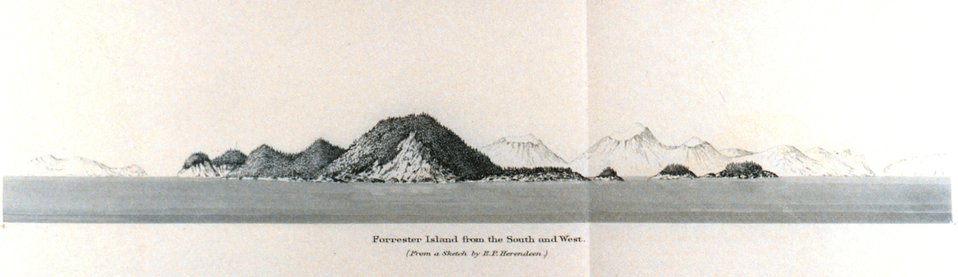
Forrester Island from the south and west. In: Pacific Coast Pilot Alaska Part I 1883. P. 64. Library call number VK943 .N3 1883.